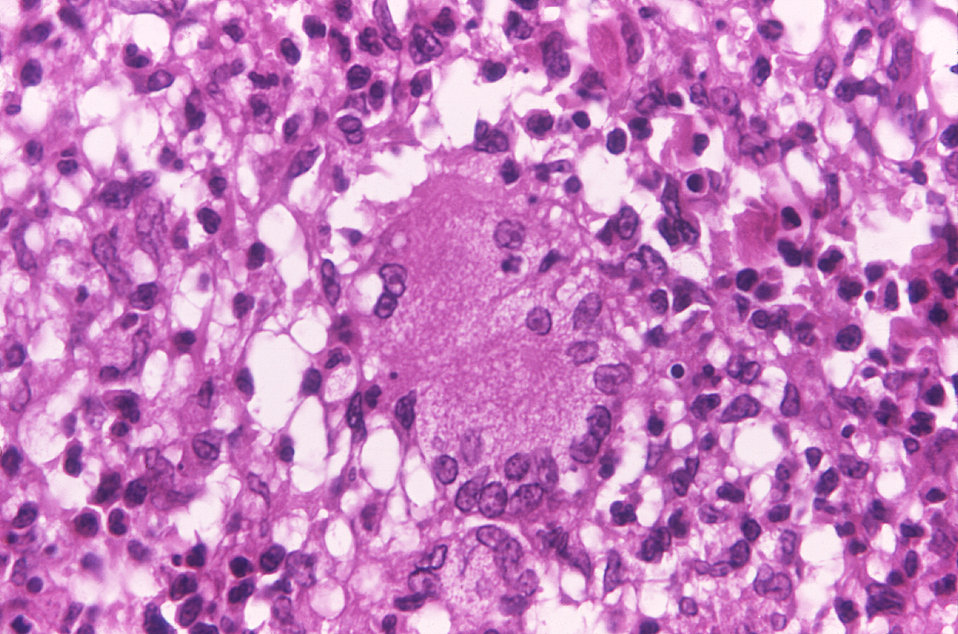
This light photomicrograph revealed some of the histopathologic cytoarchitectural characteristics seen in a mycobacterial skin infection.